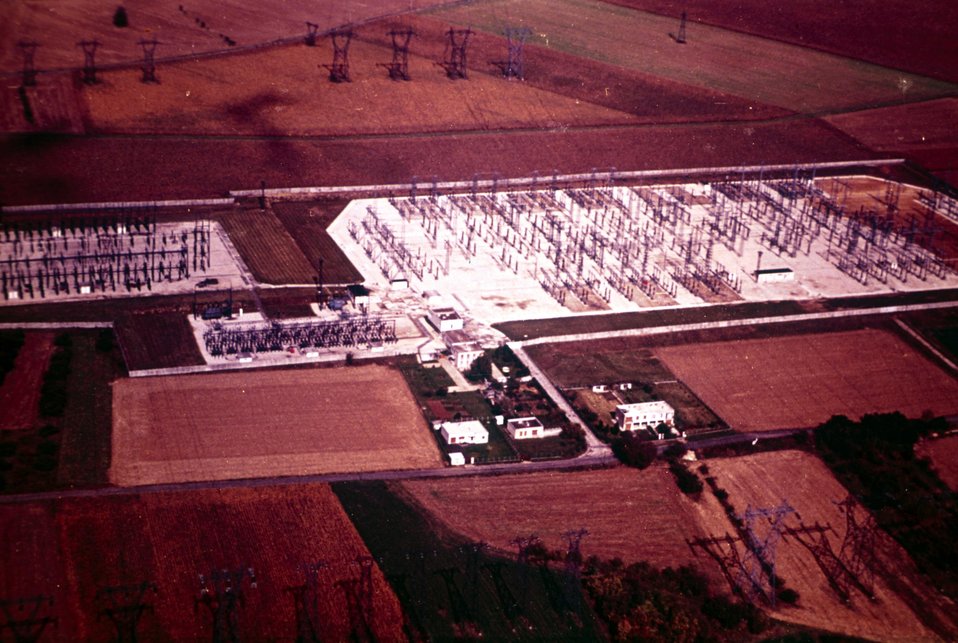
Un poste d'interconnexion.